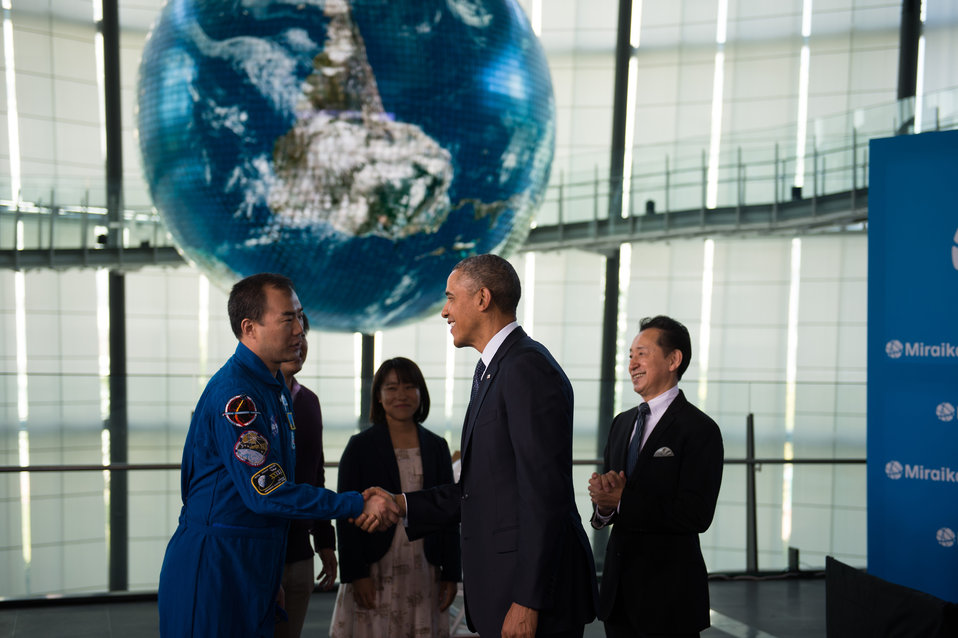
President Obama Speaks with Japanese Astronauts and Students

U.S. President Barack Obama talks to Japanese astronaut Soichi Noguchi, Japanese students, and Executive Director Mamoru Mohri of the Miraikan (the National Museum of Emerging Science and Innovation) during his visit to the museum. Dr. Mohri is Japan’s first astronaut in Tokyo, Japan, on April 24, 2014.